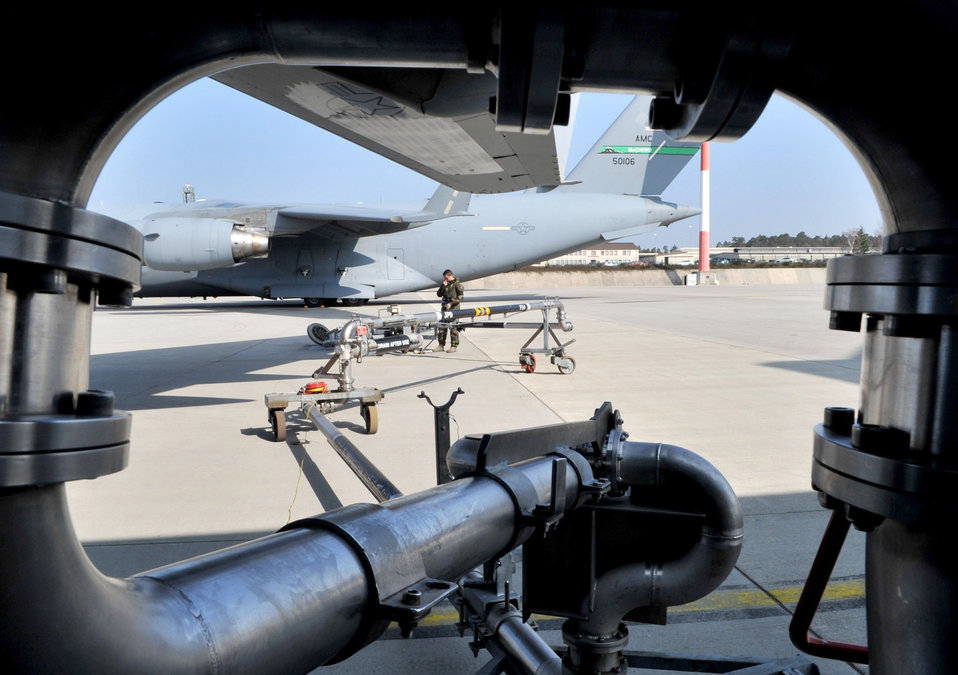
Aircraft ready for Odyssey Dawn

Airman 1st Class Jason O'Connor radios the controller after setting up to refuel a C-17 Globemaster III March 29, 2011, at Ramstein Air Base, Germany, in support of Operation Odyssey Dawn. O'Connor is a fuels distribution operator assigned to the 86th Logistics Readiness Squadron.